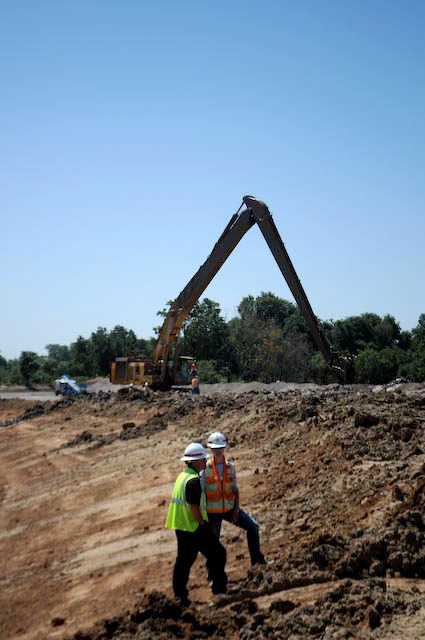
Corps digging deep to reduce West Sacramento flood risk

Sacramento River Bank Protection Project Manager Dave Cook and Project Engineer Shauna England discuss progress on construction of the new setback levee and seepage cutoff wall as a long-stick excavator digs a 75-foot-deep trench behind them June 19, 2012, in West Sacramento, Calif. The U.S. Army Corps of Engineers and the Central Valley Flood Protection Board are working together to strengthen levees along the Sacramento River and its tributaries, as part of the Sacramento River Bank Protection Project.